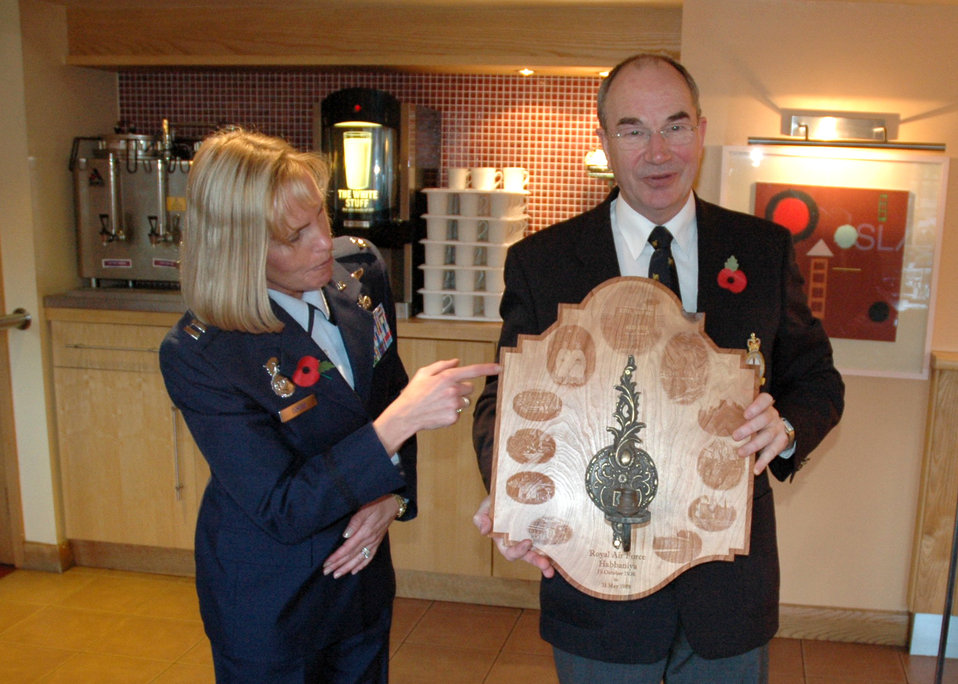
Remembrance Day Parade

Capt. Jutta Cortes presents a plaque to Dr. Christopher Morris, honorary secretary of the RAF Habbaniya Association. The center of the plaque contains a candle sconce from the Officers Club at RAF Habbinaya, Iraq.